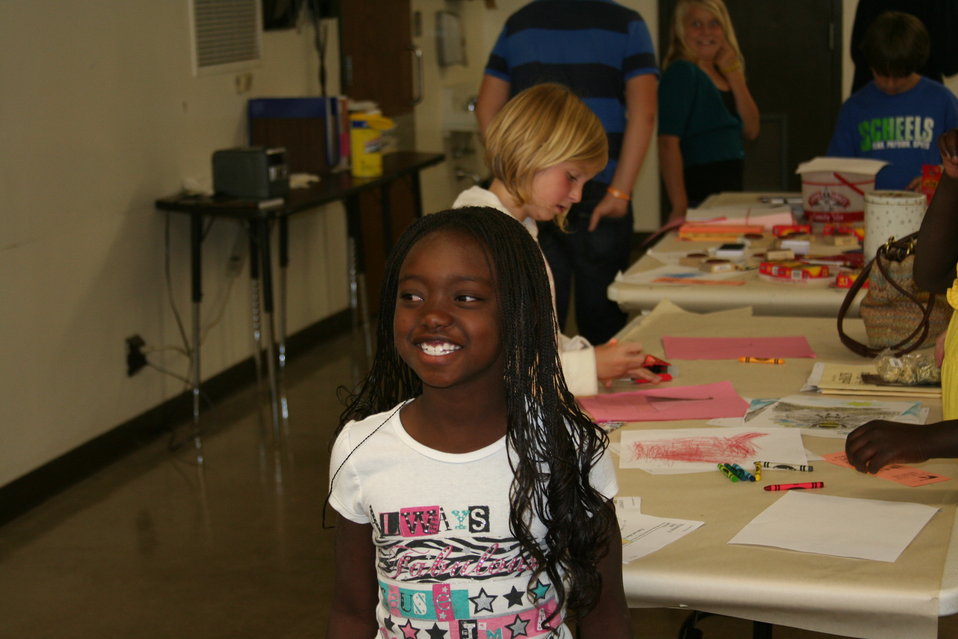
Creatures of the Night 2011